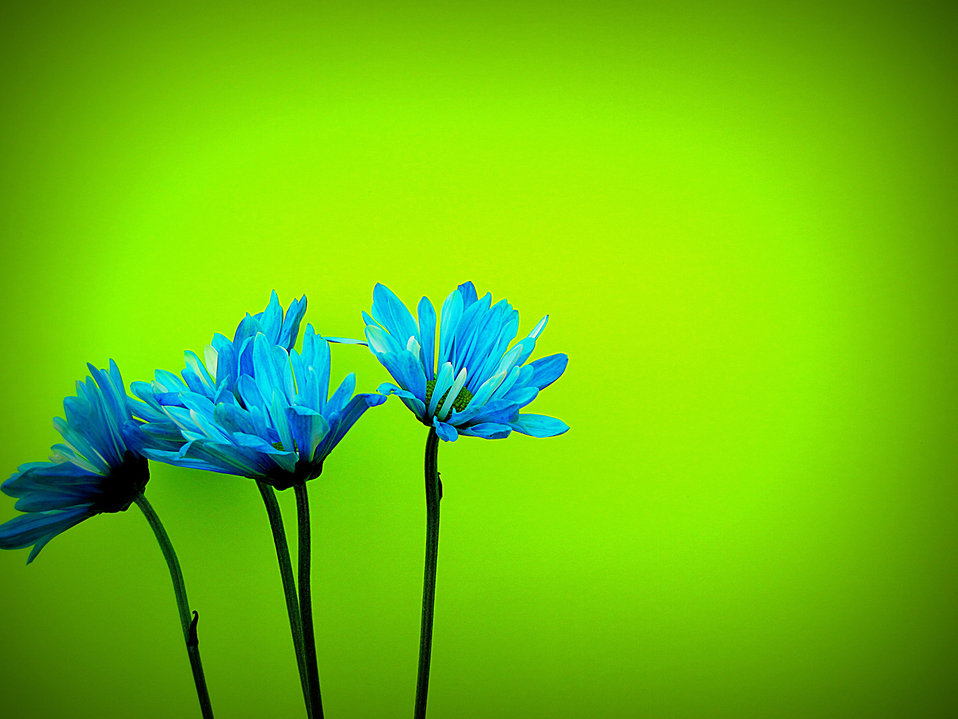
Daises

Flowers with green background.